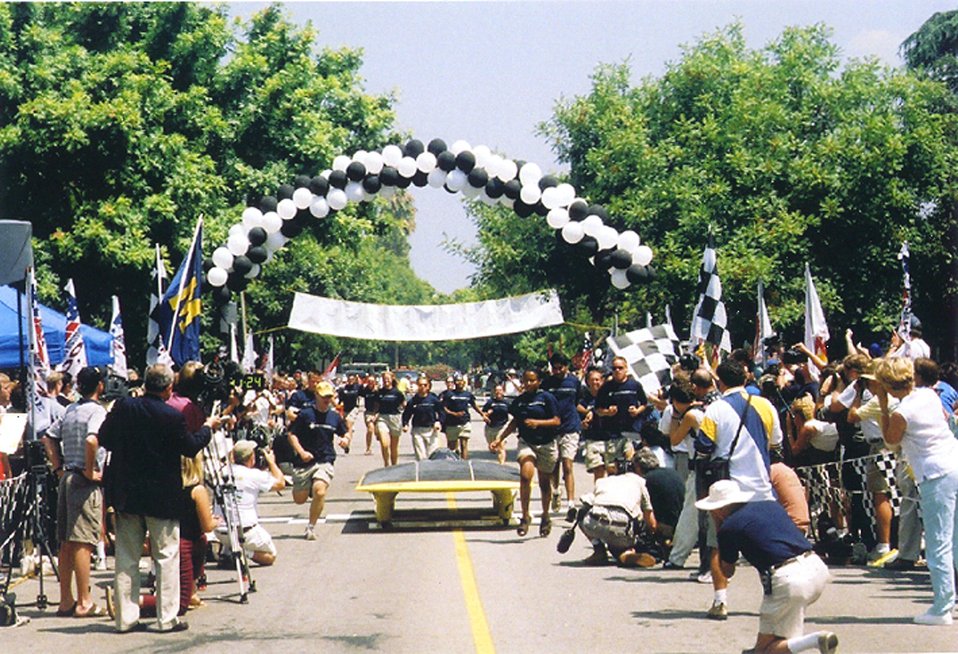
UNIVERSITY OF MICHIGAN'S SOLAR POWERED CAR CROSSING THE AMERICAN SOLAR CHALLENGE 2001 FINISH LINE.

M-PULSE, THE UNIVERSITY OF MICHIGAN'S ENTRY IN THE 2001 SUNRAYCE, CROSSED THE FINISH LINE FIRST ON JULY 25, 2001. THIS IS THE LONGEST SOLAR CAR RACE IN THE WORLD, A BIENNIAL EDUCATIONAL SPORTING EVENT IN WHICH UNIVERSITY TEAMS, COMPANIES, AND CLUBS FROM AROUND THE WORLD COMPETE TO BUILD AND RACE SOLAR POWERED CARS ACROSS THE U.S. THIS YEAR THE RACE BEGAN IN CHICAGO, ILLINOIS ON JULY 15, 2001 AND WAS COMPLETED ON JULY 25, 2001 IN CLAREMONT, CALIFORNIA, TRAVELING ALL ALONG OLD ROUTE 66.